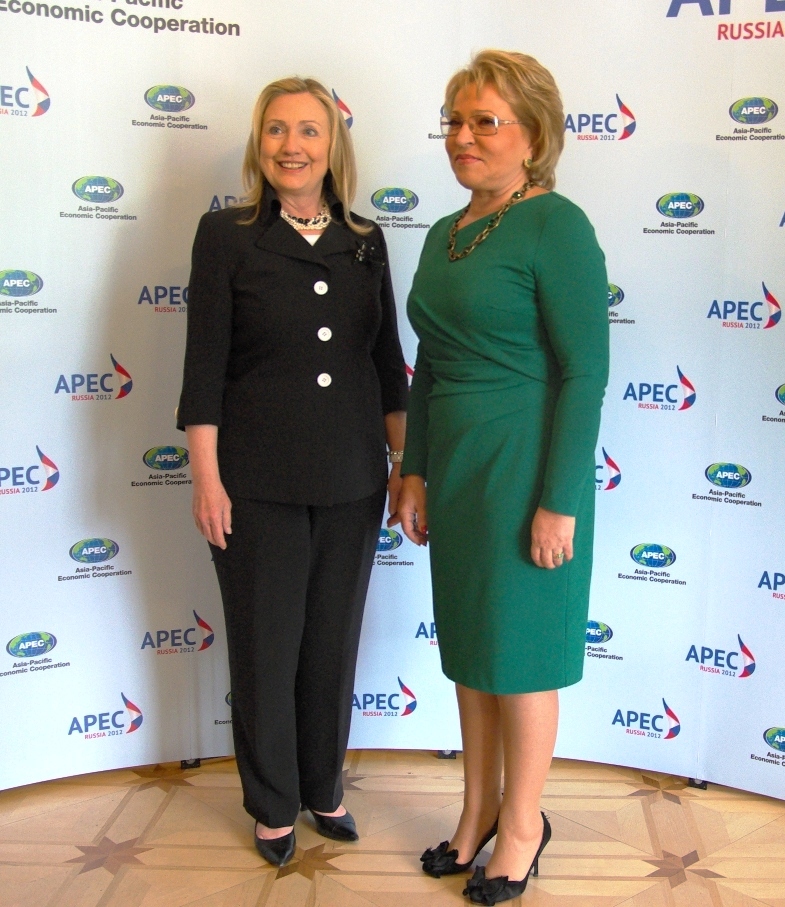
Secretary Clinton With Chairman Matveyenko

U.S. Secretary of State Hillary Rodham Clinton meets with Chairman of the Federation Council of the Russian Federation Valentina Matviyenko at the Catherine Palace in St. Petersburg, Russia, on June 29, 2012.